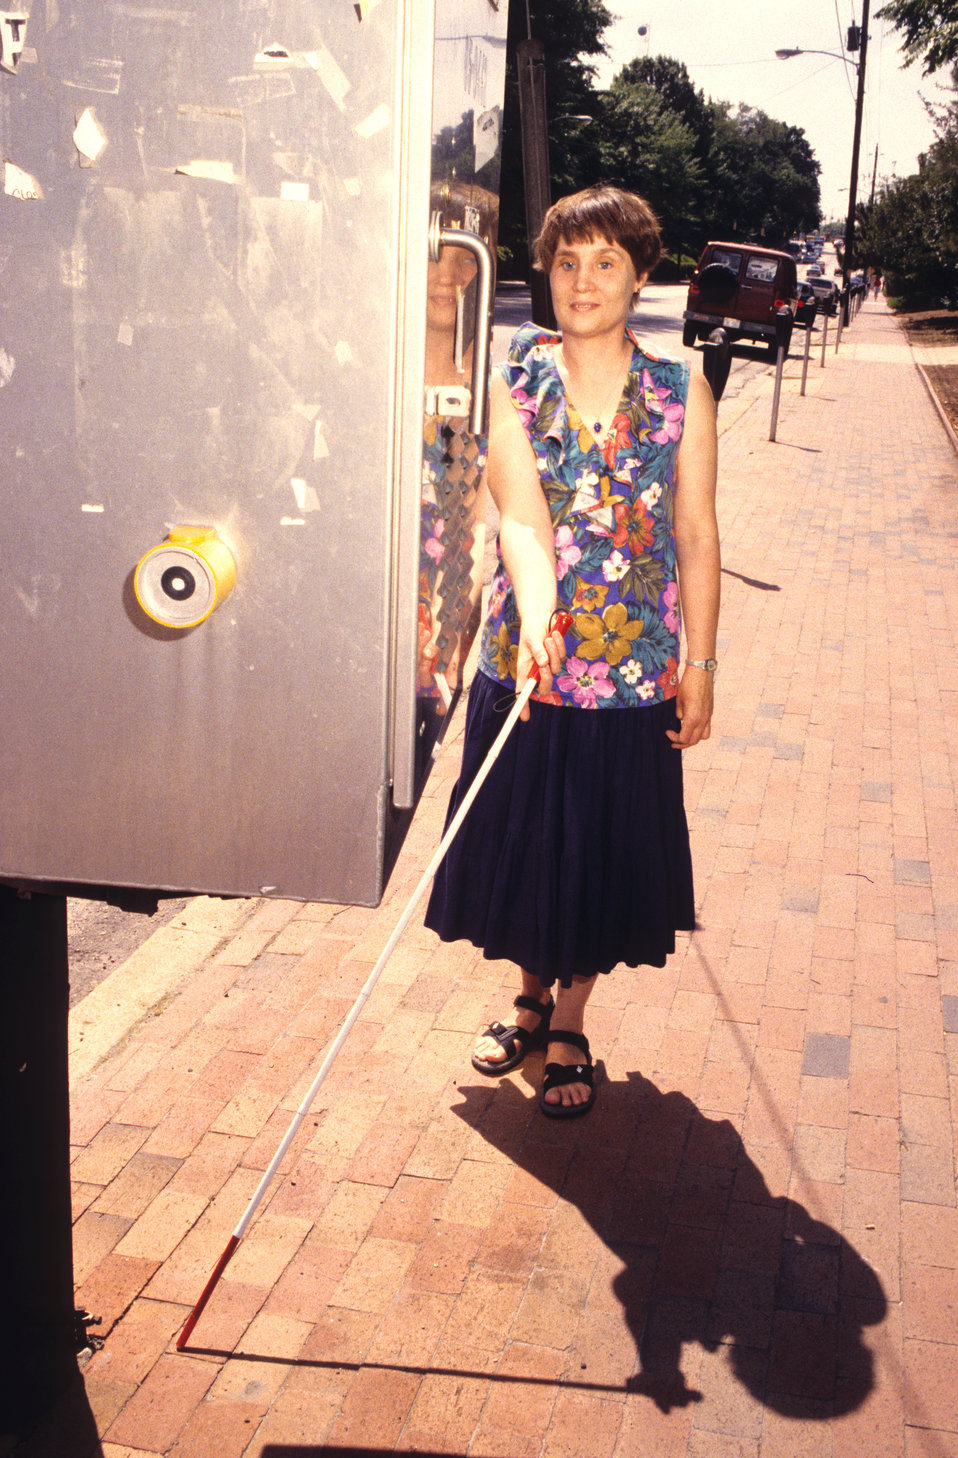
This visually-impaired woman was using a walking stick in order to 'extend her reach' in order to detect obstacles in her path. Using a 'sweeping' motion was able to forewarn her of objects, such as this electrical box in her way, as well as changes in terrain, which in this case, was the sidewalk surface transitioning into the adjacent grassy surface. You can see how taking into account impairments such as this makes the process of designing such publicly-accessible environmental surroundings challenging, but necessary. See PHIL# 9062 and 9063 for additional pictures of this person interacting with other environments while using her walking stick.